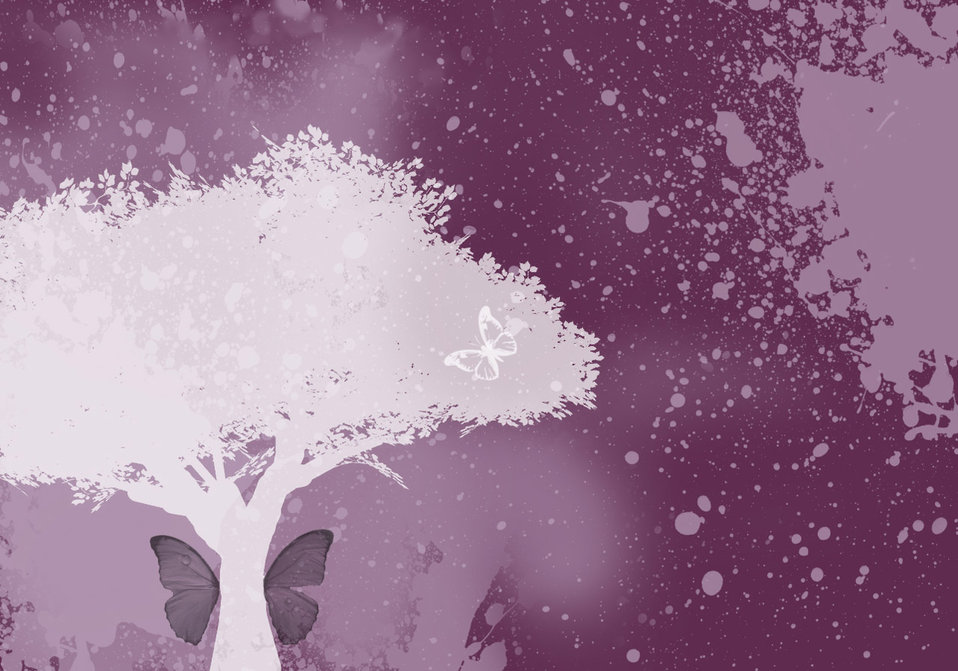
Butterfly tree

Purple background with a tree and butterfly wings.